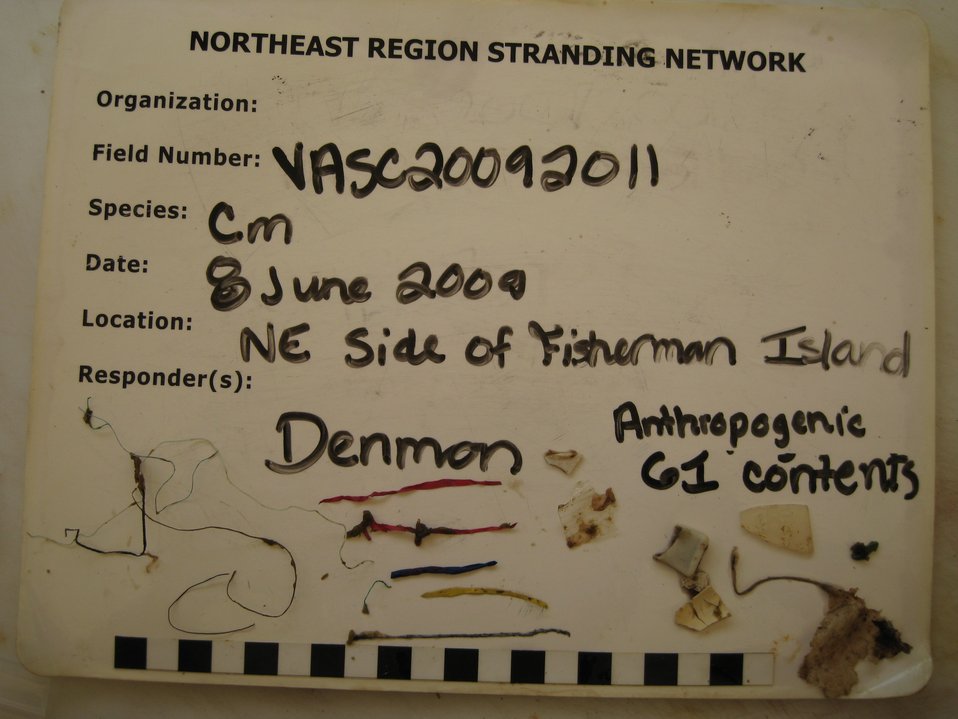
Contents of necropsied green turtle

Contents include pieces of latex balloon, hard plastic and soft plastic.